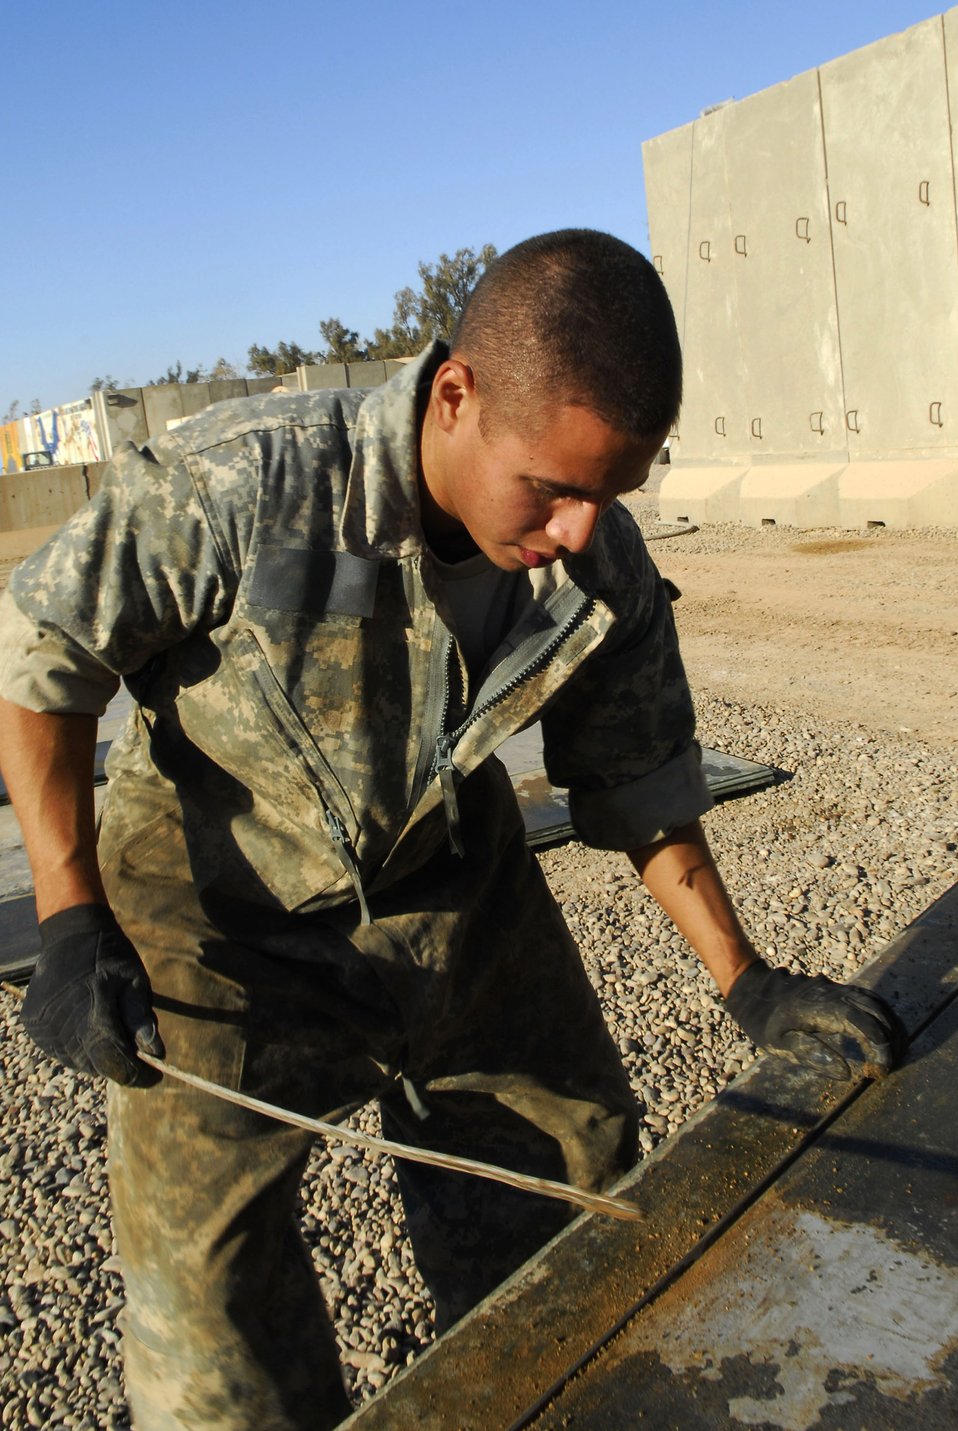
Muddy waters

Airman 1st Class Joshua Vasquez cleans grooves on a floor panel for the new vehicle maintenance overhang Nov. 25 at Balad Air Base, Iraq. During Iraq's rainy season, mud can impact the Air Force's mission. The new shelter will allow vehicle maintainers to accomplish their mission in any type of weather. Airman Vasquez, a 727th Expeditionary Aircraft Squadron vehicle maintainer, is deployed from Mountain Home Air Force Base, Idaho.